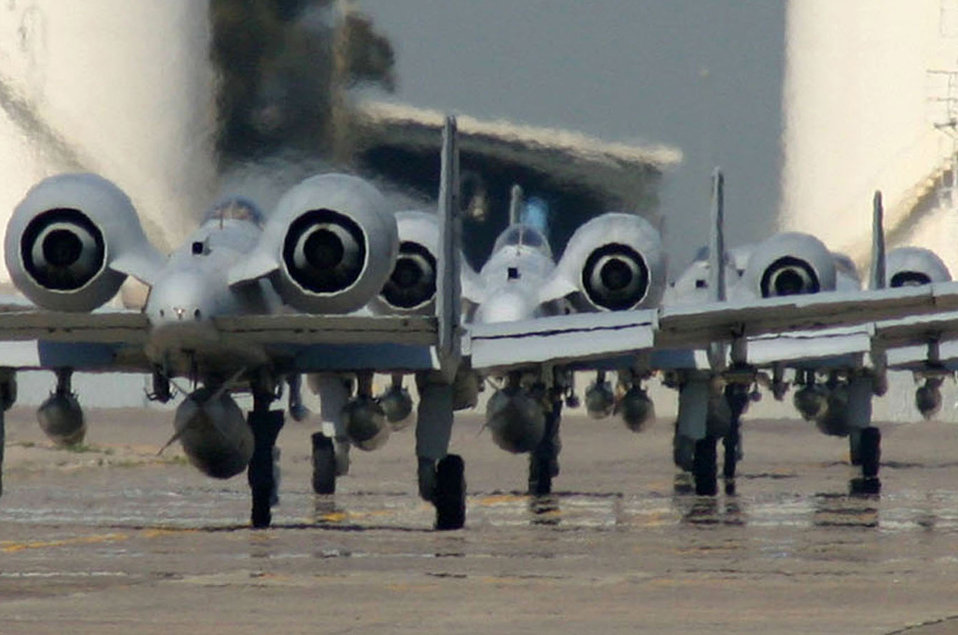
Bolts on water

SIGONELLA, Sicily -- Four A-10 Thunderbolt II aircraft line up for takeoff from Naval Air Station Sigonella here April 15. NAS Sigonella provides logistics support for Commander, Sixth Fleet and NATO forces in the Mediterranean area.